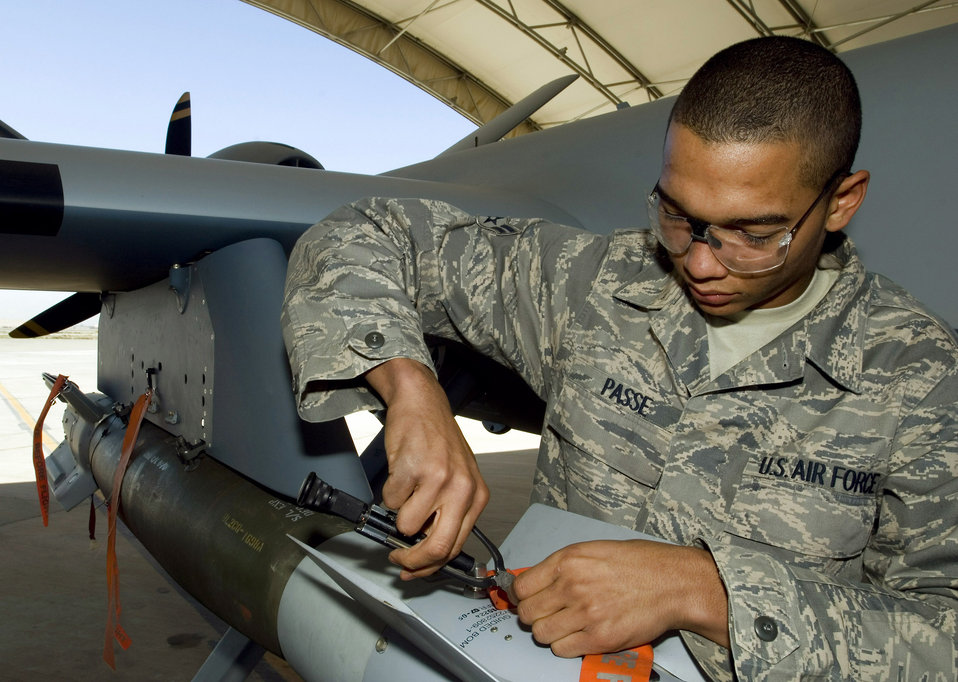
UAVs return from successful missions

Airman 1st Class Gale Passe disarms a GBU-12 laser-guided munition attached to an MQ-9 Reaper unmanned aerial vehicle at Joint Base Balad, Iraq, Nov. 10. The Reaper can carry up to 3,750 pounds of ordnance, including GBU-12s and hellfire missiles. Airman Passe, an aircraft armament systems journeyman with the 332nd Expeditionary Aircraft Maintenance Squadron, is deployed from Creech Air Force Base, Nev.